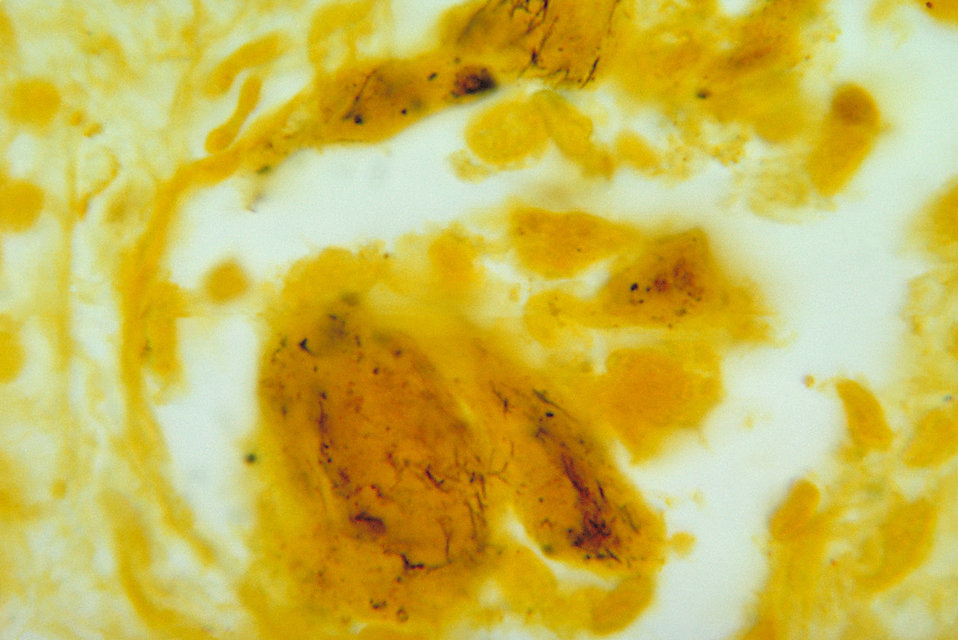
Photomicrograph of kidney tissue, using a silver staining technique, revealing the presence of Leptospira bacteria.